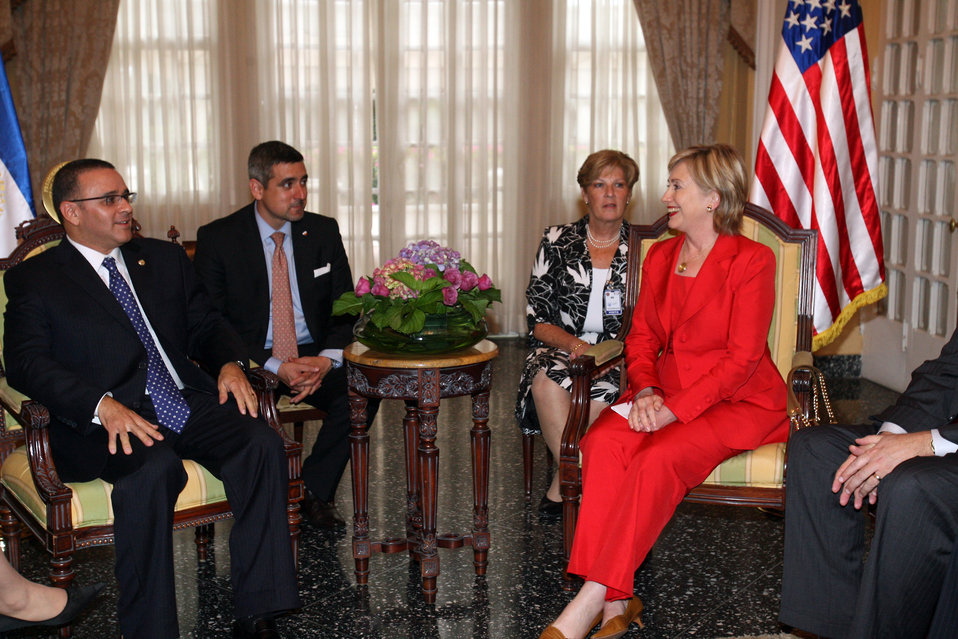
Secretary Clinton Meets New President of El Salvador

U.S. Secretary of State Hillary Rodham Clinton and Salvadoran President Mauricio Funes talk at a bilateral meeting held after his Presidential Inauguration on June 1, 2009 in San Salvador, El Salvador. Secretary Clinton led the U.S. Delegation for the Presidential Inauguration.